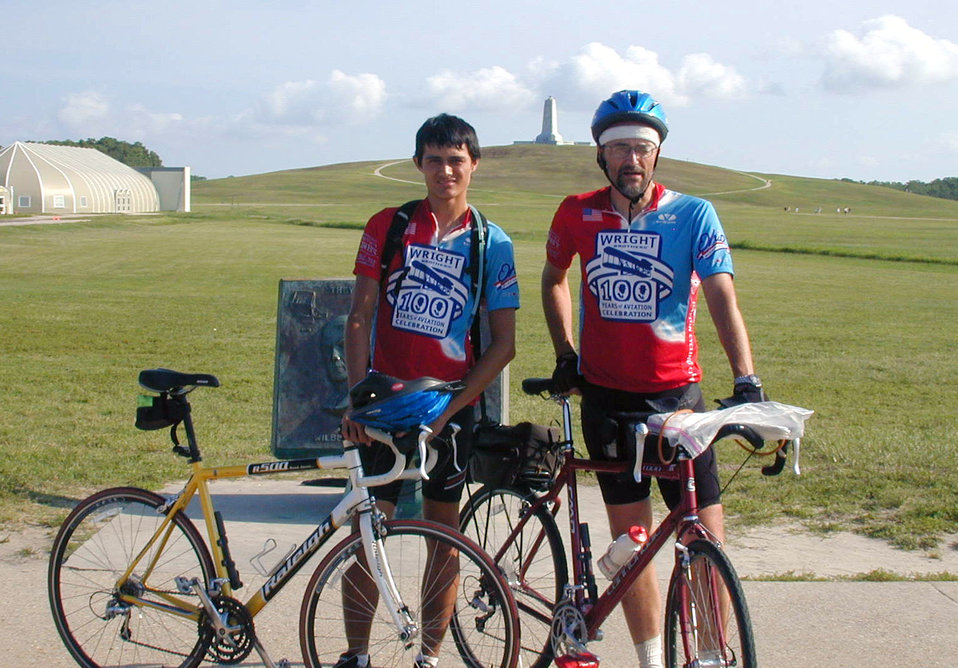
The Smiths

KITTY HAWK, N.C. -- Casey Smith (left) and his father, Chuck, arrive here after a 13-day, 900-mile bicycle ride from Dayton, Ohio. Chuck works in information technology for Air Force Materiel Command at Wright-Patterson Air Force Base, Ohio. The ride was symbolic for the Centennial of Flight because it started where the first aircraft was designed and ended where it was first flown in 1903.